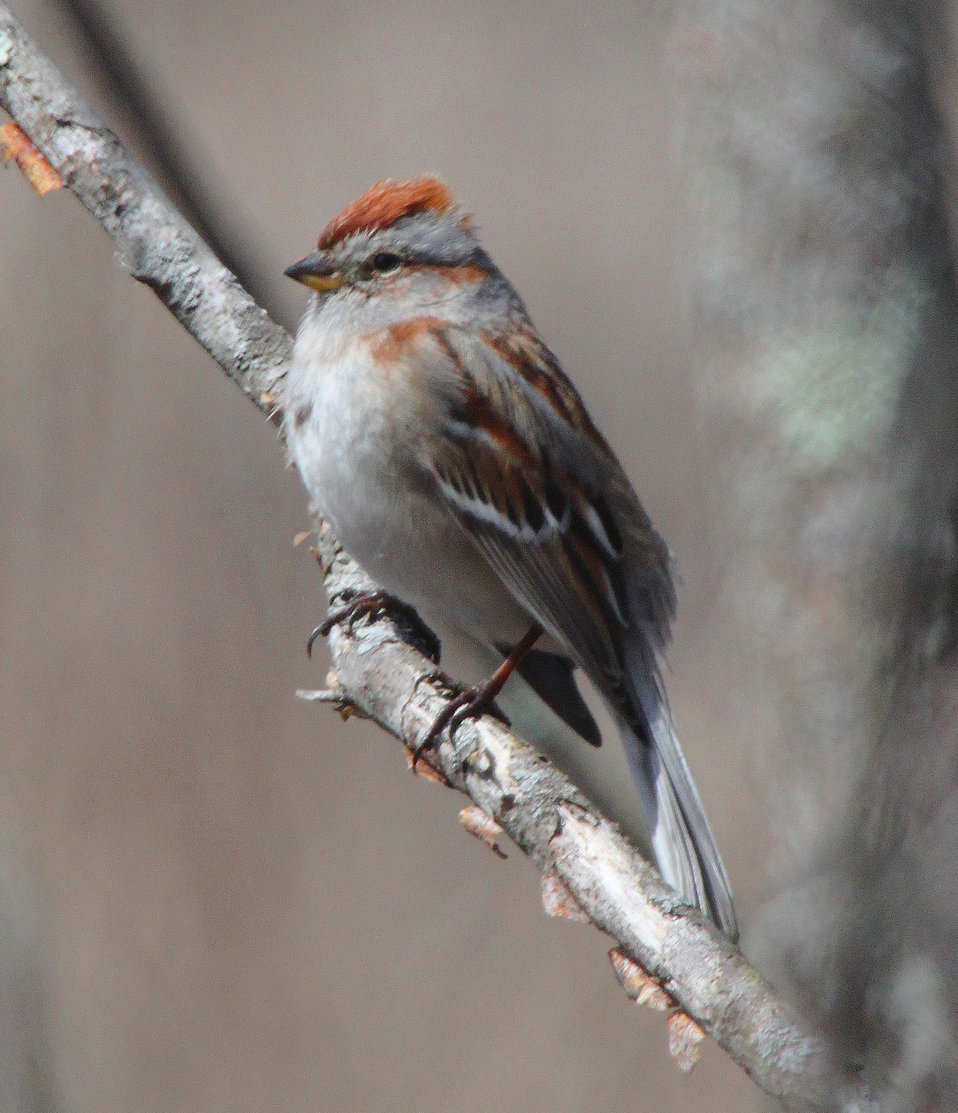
Tree Sparrow
Photo credit: Ken Sturm; USFWS